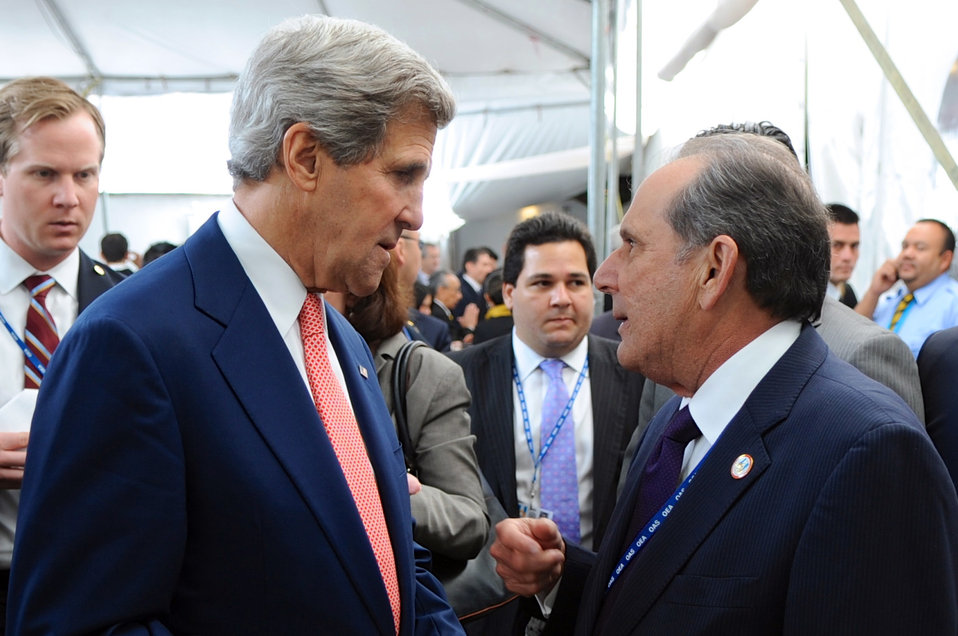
Secretary Kerry Chats With Dominican Deputy Foreign Minister Trullols

U.S. Secretary of State John Kerry chats with Dominican Deputy Foreign Minister Jose Manuel Trullols before the General Assembly of the Organization of American States Plenary Session in Antigua, Guatemala, on June 5, 2013.